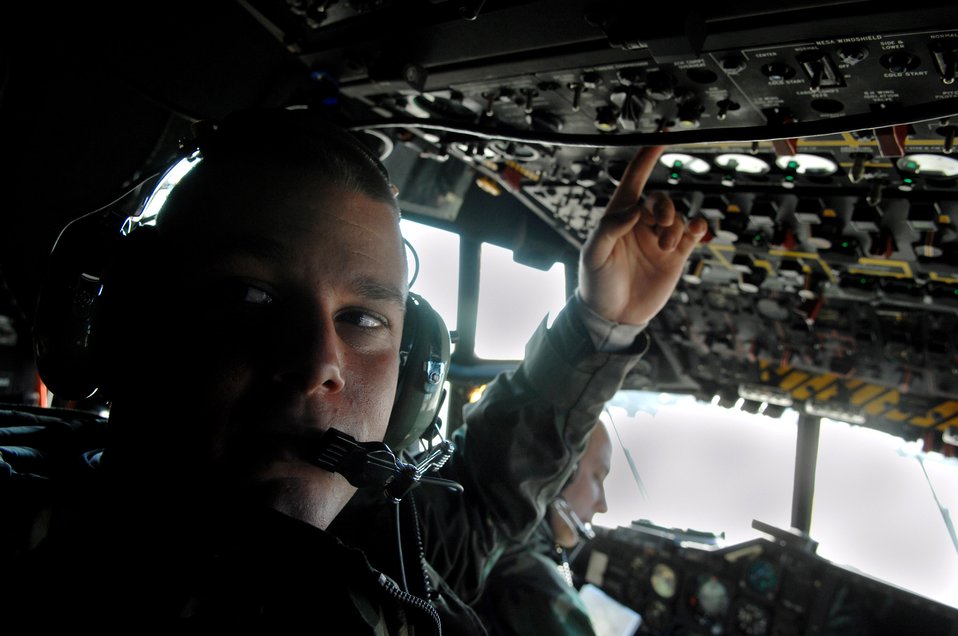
Moody muscle moves mission

Staff Sgt. Jonathan Ruszler assists with an engine run on an HC-130P Combat King Jan. 3 at Moody Air Force Base, Ga. Base maintainers spend many hours after every flight keeping the aging aircraft in service. Sergeant Ruszler is a 723rd Aircraft Maintenance Squadron engine technician.